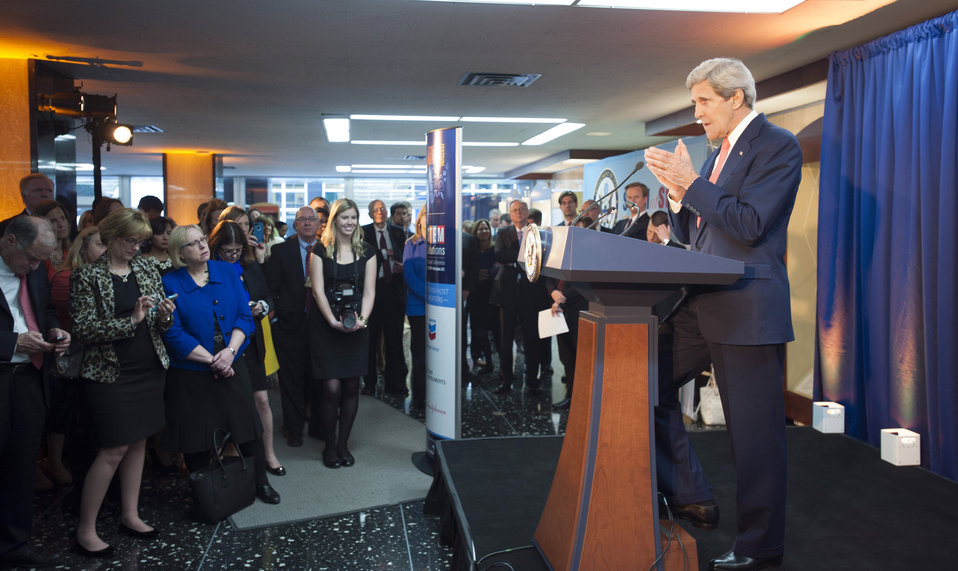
Secretary Kerry Delivers Remarks in Honor of STEM at State

U.S. Secretary of State John Kerry delivers remarks at a reception in honor of STEM (Science, Technology, Engineering, and Math) at State, at the U.S. Department of State in Washington, D.C., on April 24, 2014.